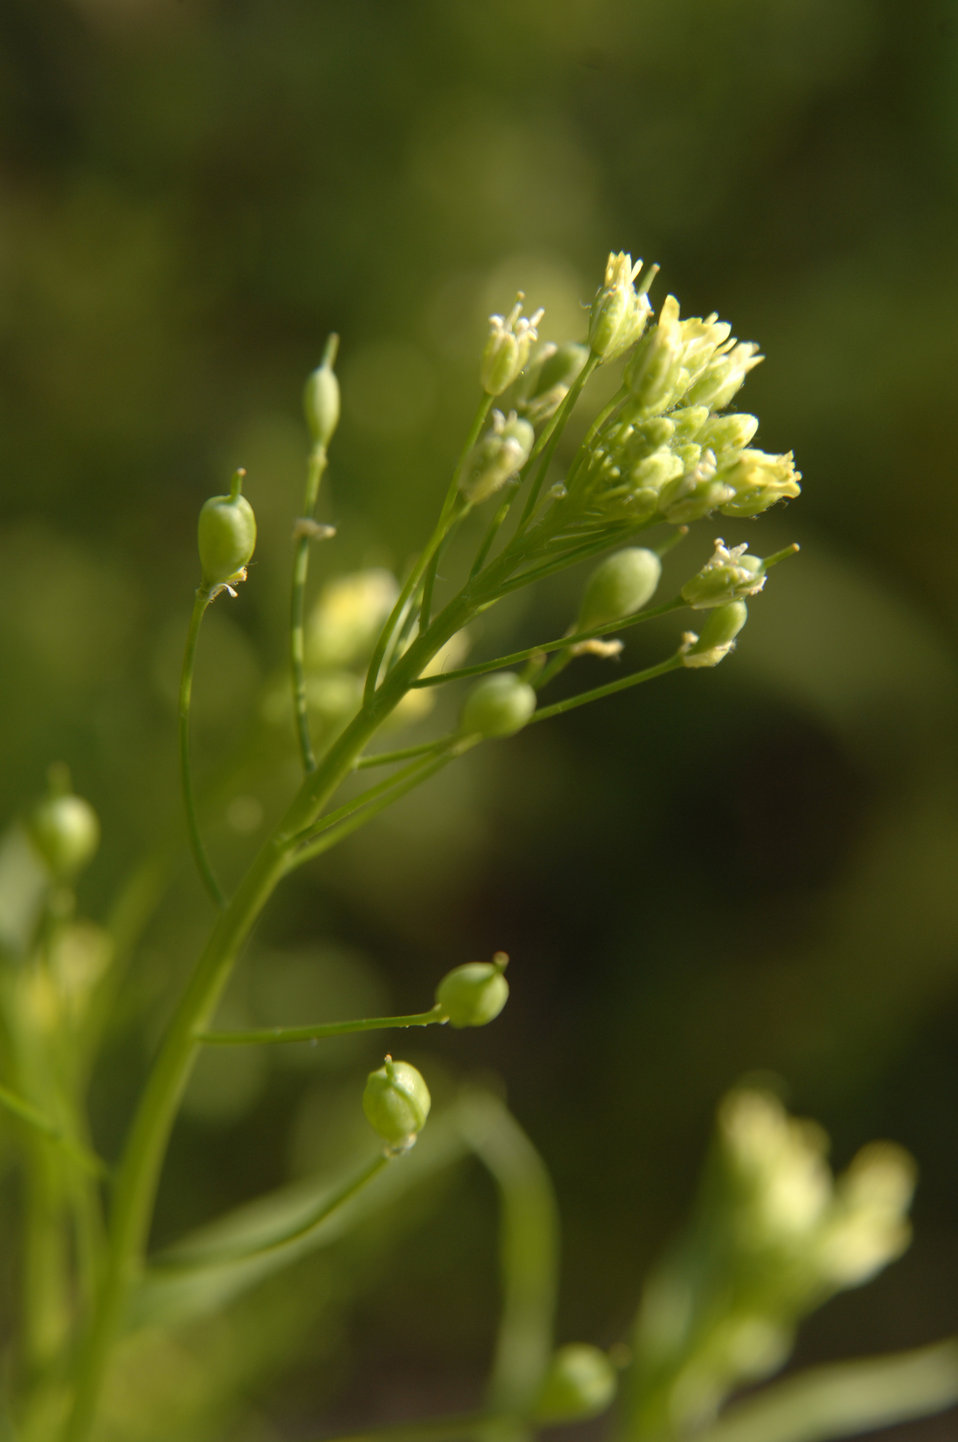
The Power Plant garden at the National Arboretum in Washington, D.C., displays a variety of plants that may provide a valuable and renewable source of bioenergy for America. Bioenergy is renewable energy made available from materials derived from biological sources. Camelina is native plant from the Mediterranean countries of Europe and has the potential to be an important oil producing plant for biodiesel fuel. Camelina is a weed that grows well on marginal lands and has a short growing season. This photograph shows camelina growing in the Power Plant garden at the National Arboretum in Washington, D.C. on August 19, 2008.